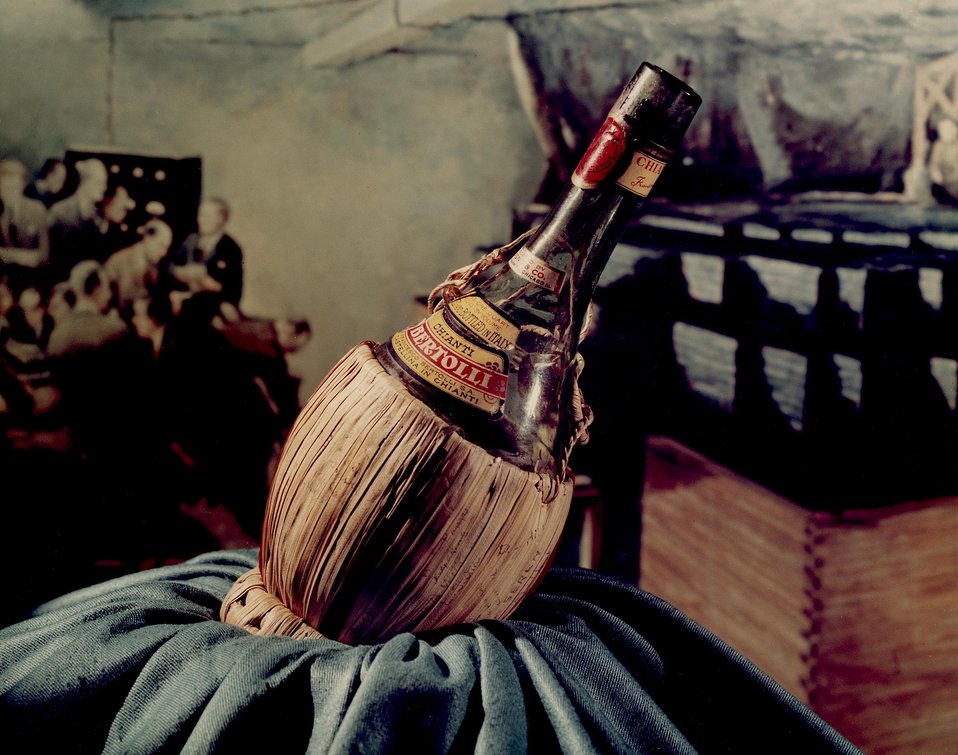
Photo montage of the CP-1 experiment mural with the CP-1 Chianti bottle..